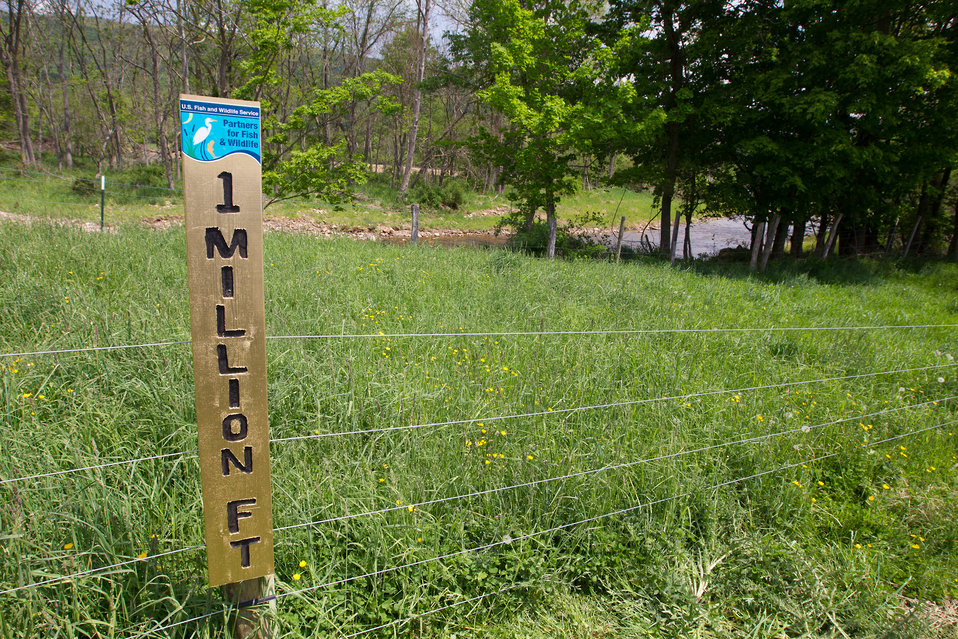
Celebrating 1 Million Feet of Conservation Fence in WV

Partners for Fish and Wildlife Program